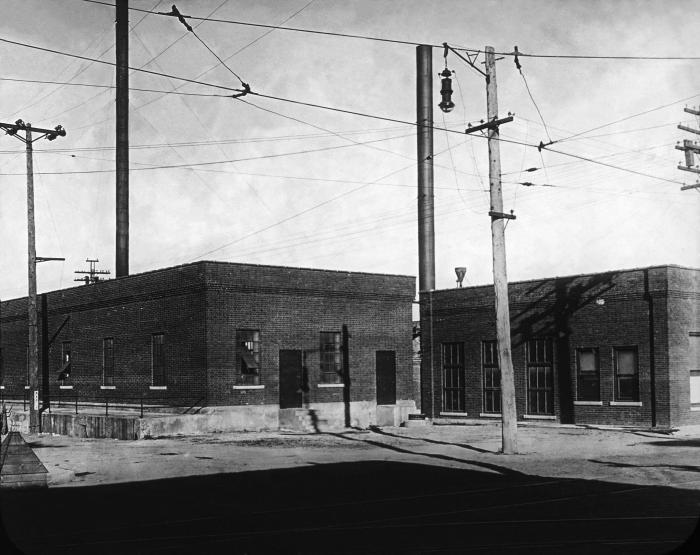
This historic 1916 photograph depicted an exterior view of the Chisholm, Minnesota, Water and Light Company's water filtration plant, which was used to purify the town's potable water supply. An interior view was pictured in PHIL images #'s 8482, 8483, 8484, and 8485.